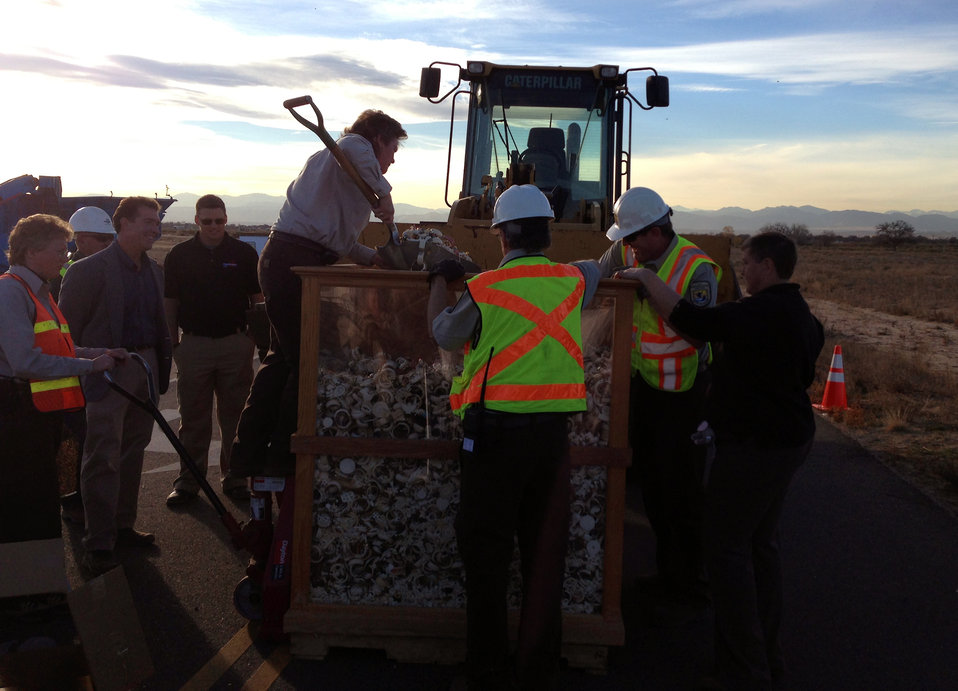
Ivory jewelry being shoveled into the crusher by hand.